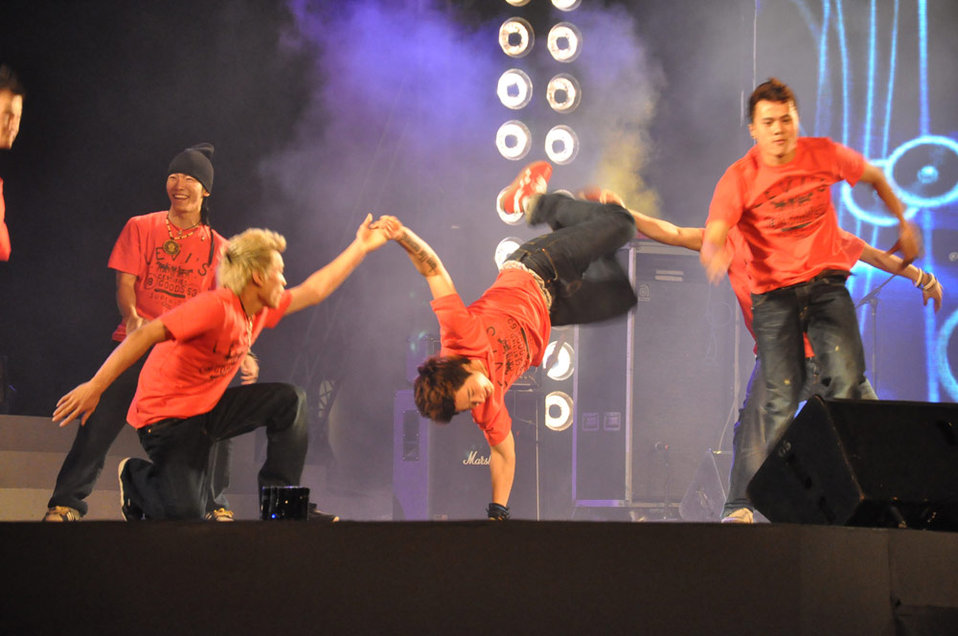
USAID Vietnam and MTVEXIT against Human Trafficking

Hanoi concert, March 27, 2010